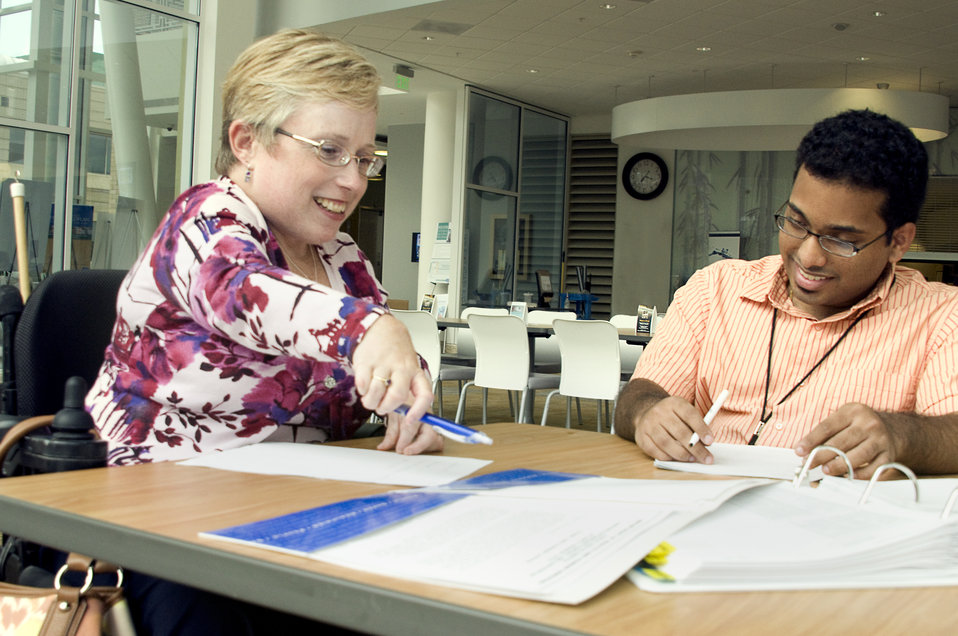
This image depicts two people who'd met on a Centers for Disease Control (CDC) Atlanta, Georgia campus in order to conduct a meeting. Both were seated in wheelchairs, and both appear to have overcome their disabilities, carrying out their daily activities with the need of little assistance. What was important, was the highly-accessible environment made available to these individuals, which is an organization-wide goal, and which included access to all campus facilities.